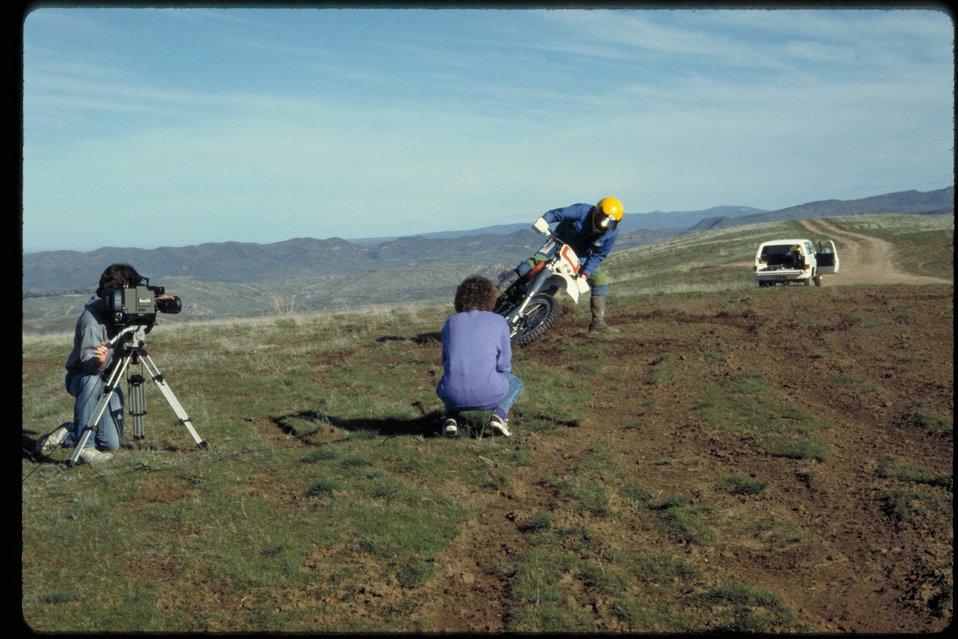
Photographers recording a dirtbiker Boise Front Four Rivers Field Office LSRD Lower Snake River District